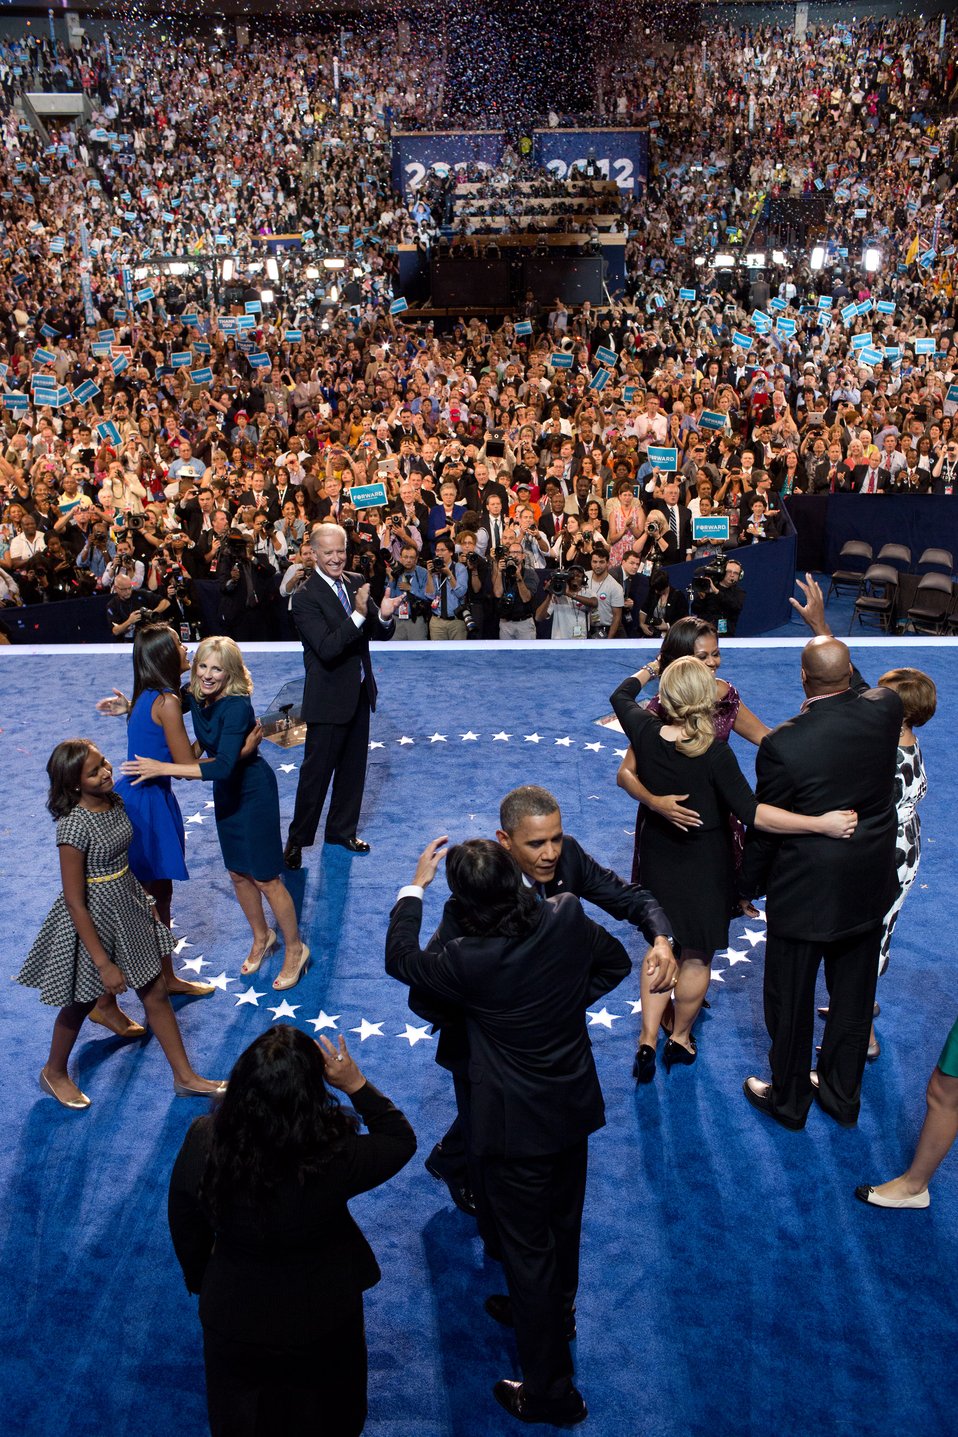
Sept. 6, 2012
'Chuck Kennedy made this overhead shot as the Obama and Biden families joined together onstage following the President's speech at the Democratic National Convention in Charlotte.'